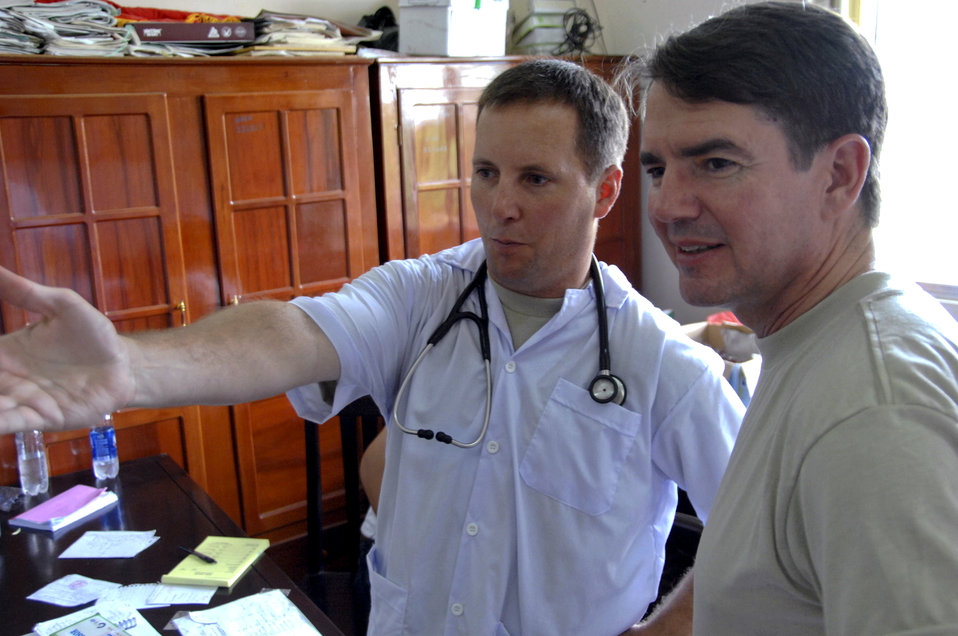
Operation Pacific Angel concludes

Lt. Col. Gerald Delk (left) briefs Maj. Gen. Jan-Marc Jouas on the bi-national family practice clinic in Tan Thoi, Vietnam, during Pacific Angel 2010 on May 15, 2010. General Jouas is the U.S. Pacific Air Forces director of Operations, Plans, Requirements and Programs.